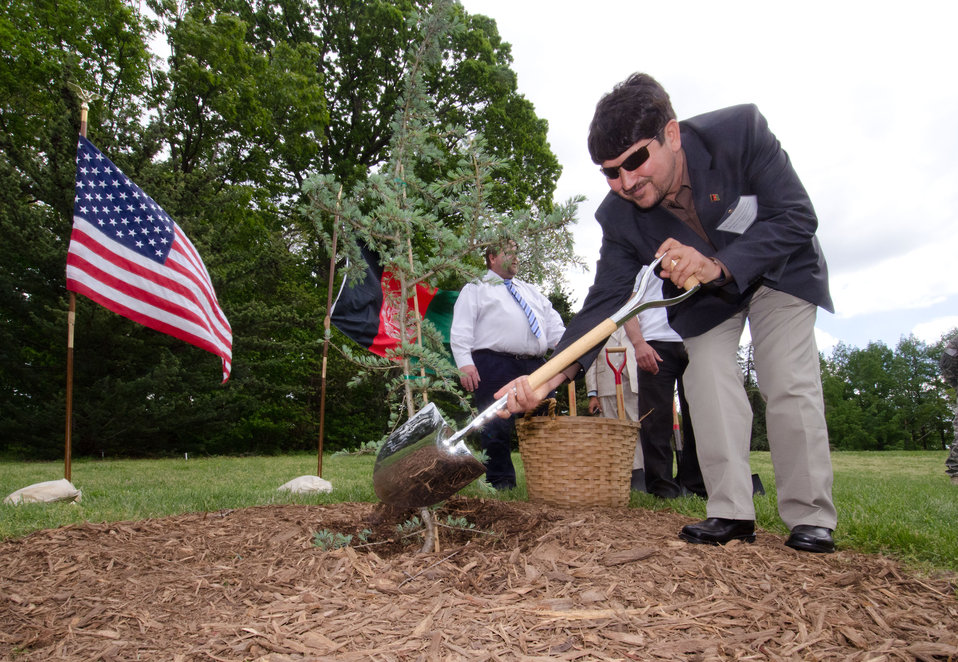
Afghan District Governor of Jaghori District Zafar Sharif added the final shovel of mulch during the Arbor Day tree planting of a Cedrus deodara ('Karl Fuchs') at the U.S. National Arboretum, on Friday, April 29, 2011 in Washington, DC.